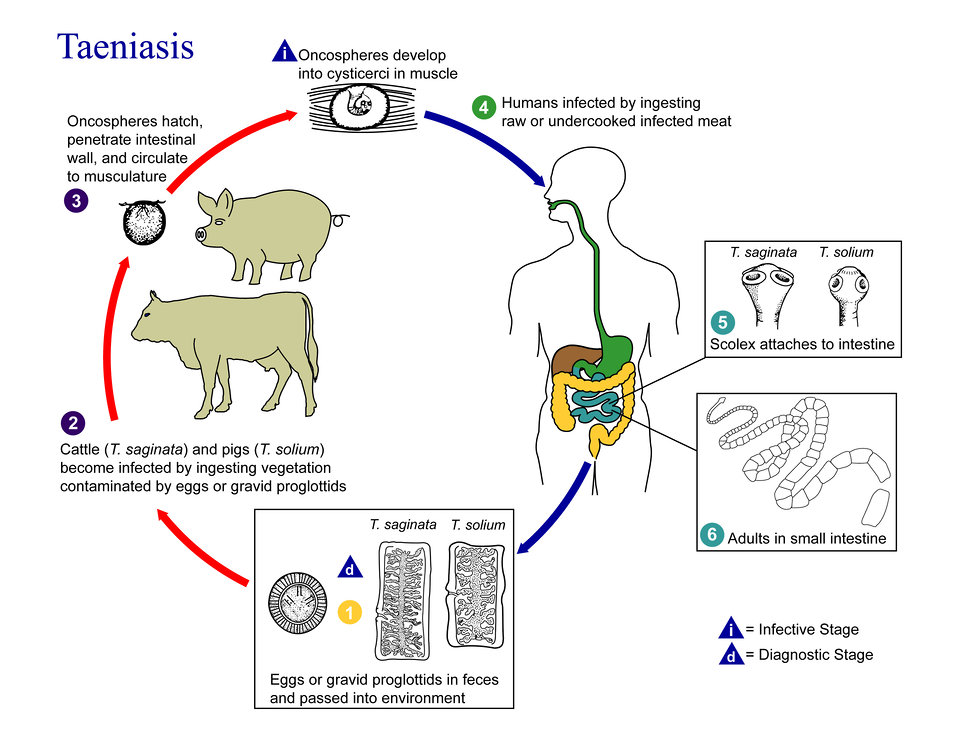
This is an illustration of the life cycle of Taenia saginata and Taenia solium, the causal agents of Taeniasis.